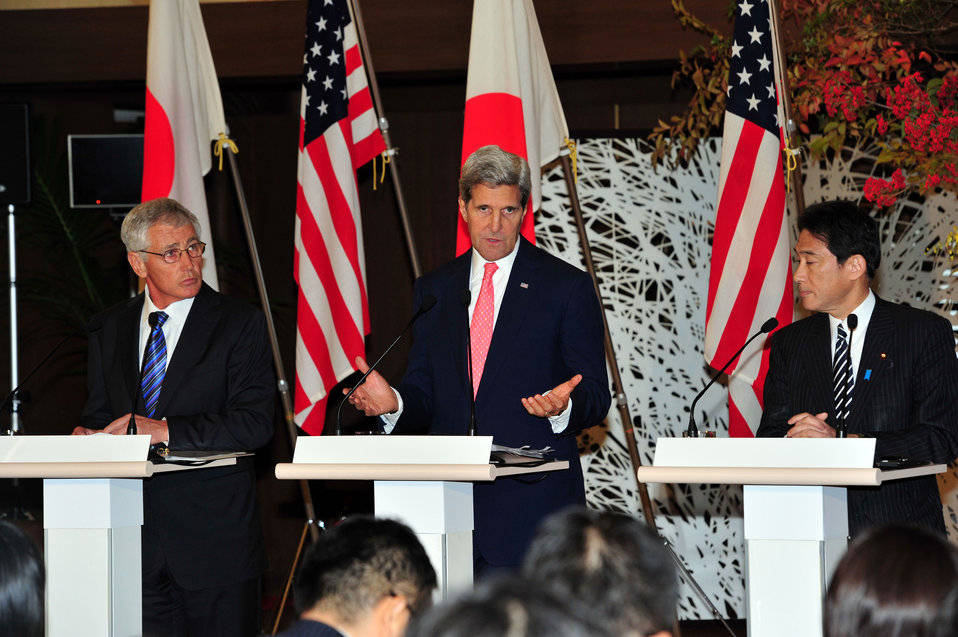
Secretary Kerry Responds to a Reporter's Question

U.S. Secretary of State John Kerry responds to a reporter's question during the joint press conference with U.S. Secretary of Defense Chuck Hagel, Japanese Defense Minister Itsunori Onodera, and Japanese Foreign Minister Fumio Kishida in Tokyo, Japan, on October 3, 2013.